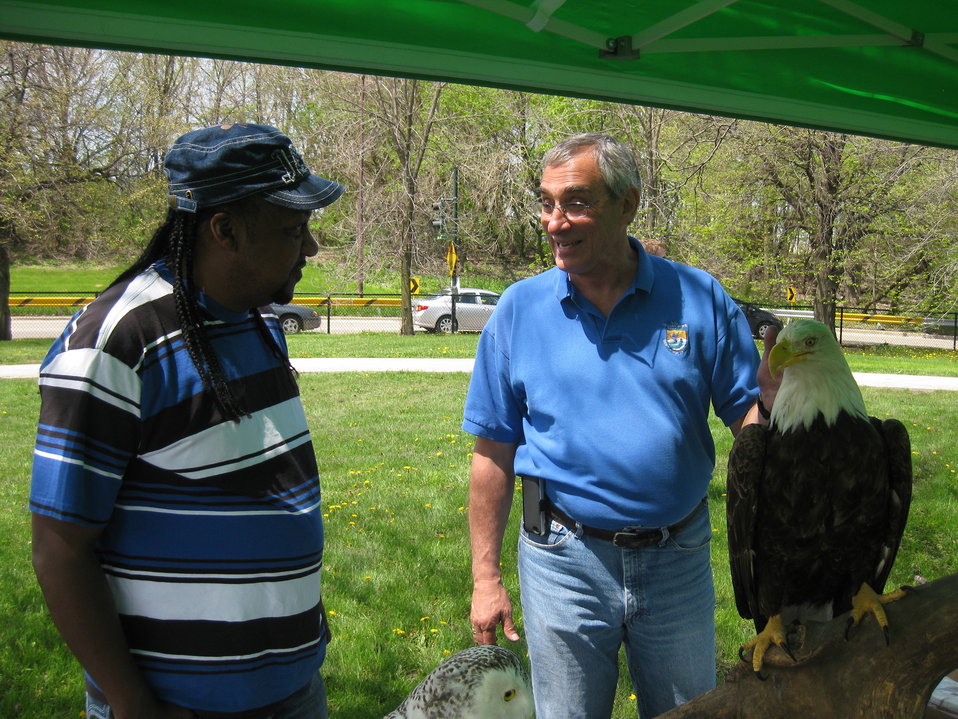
Tom Melius Talks about Eagles with Chicago participant

R3 Regional Director Tom Melius
Chicago Park District May 10 Burnham Corridor Community Planting Day
Photo by USFWS; Louise Clemency